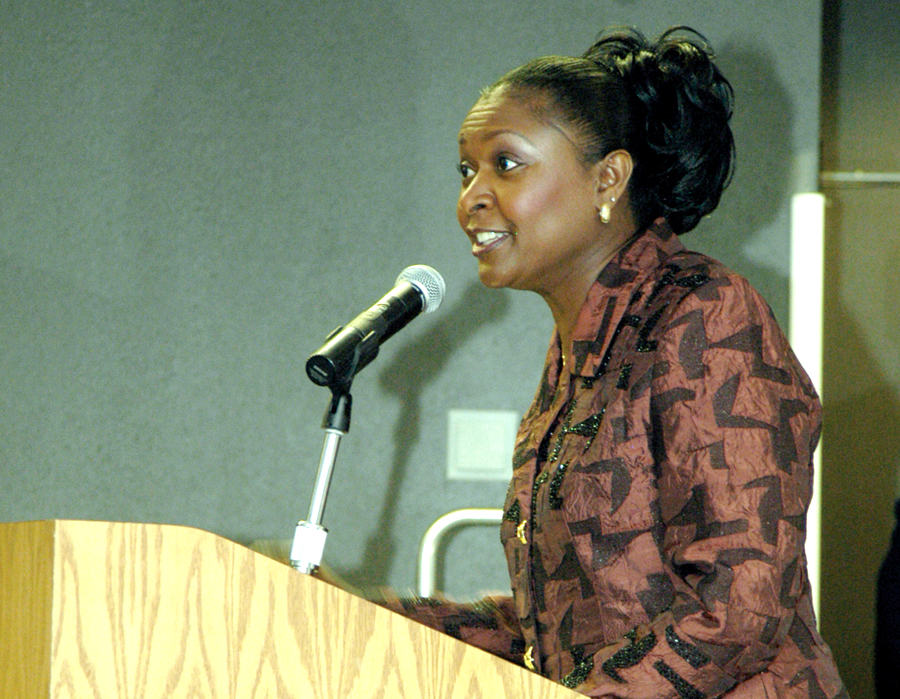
Schriever holds Black History Month kickoff breakfast

SCHRIEVER AIR FORCE BASE, Colo.(AFPN) -- Dr. Jacqueline Taggart speaks about community to an audience of about 150 people during the African-American History Month kickoff breakfast here Feb. 1. Dr. Taggart is a business professor at a community college in Colorado Springs.